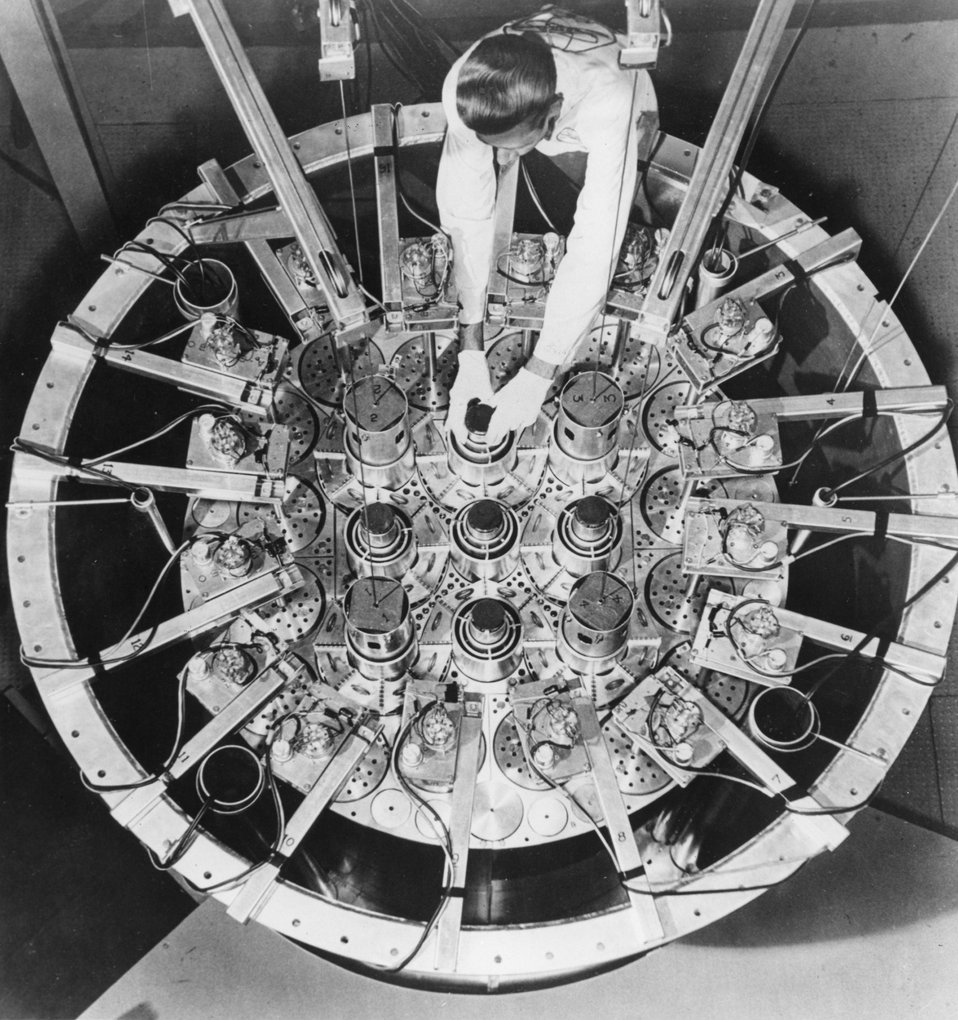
Laboratory assembly of Babcock & Wilcox's AEC's Advanced Test Reactor for critical measurements. c. 1963